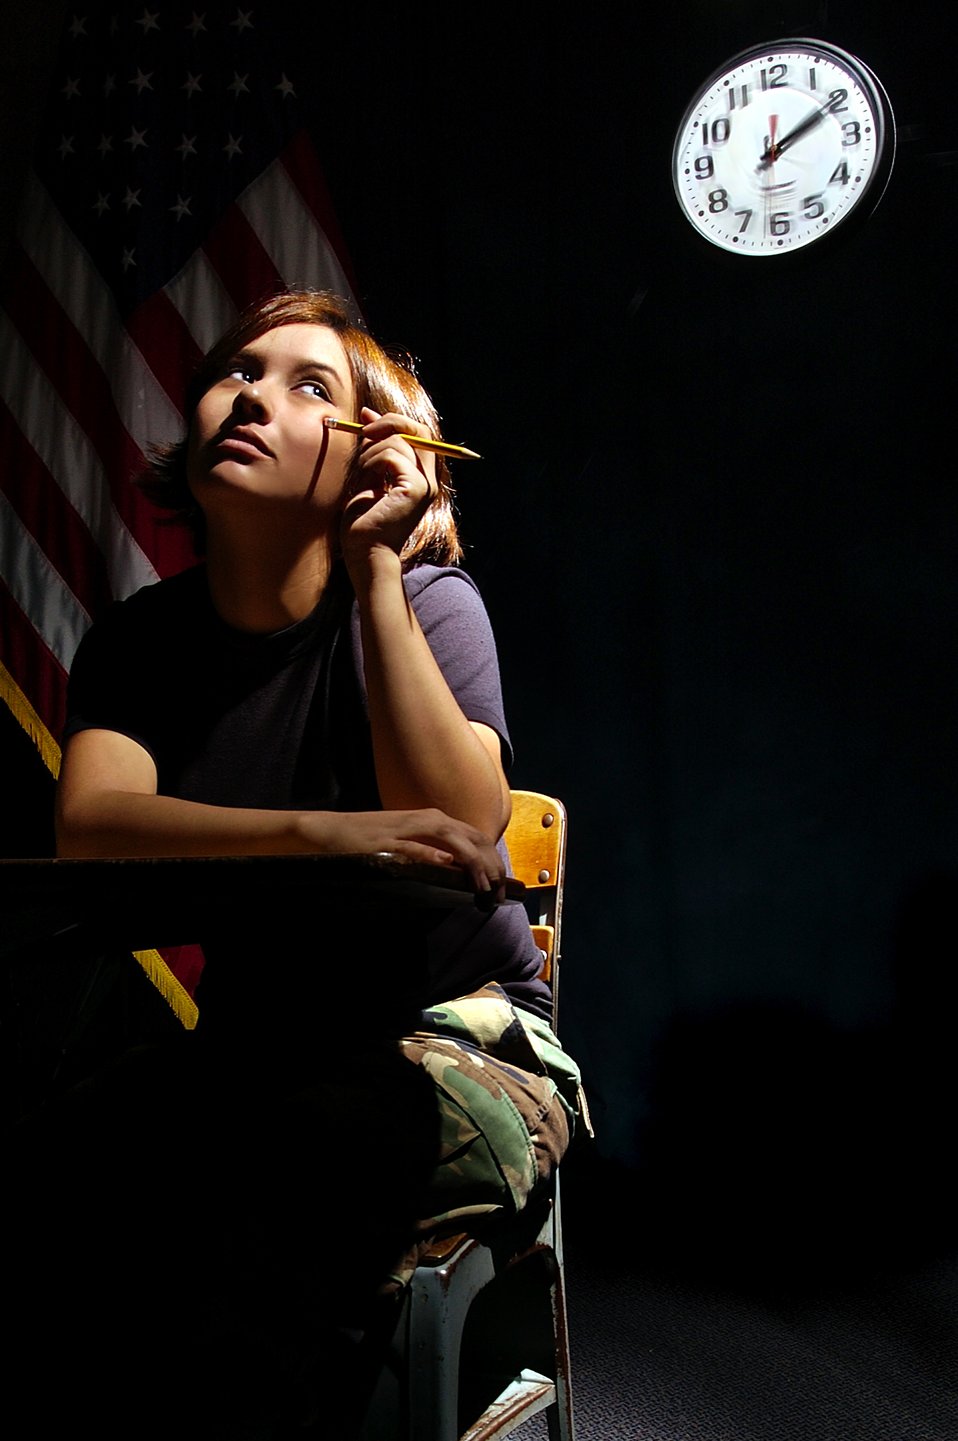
Operation Air Force

LANGLEY AIR FORCE BASE, Va. -- Feel like your wasting time or money on subjects you already understand? Try taking a CLEP test to expedite your college degree.